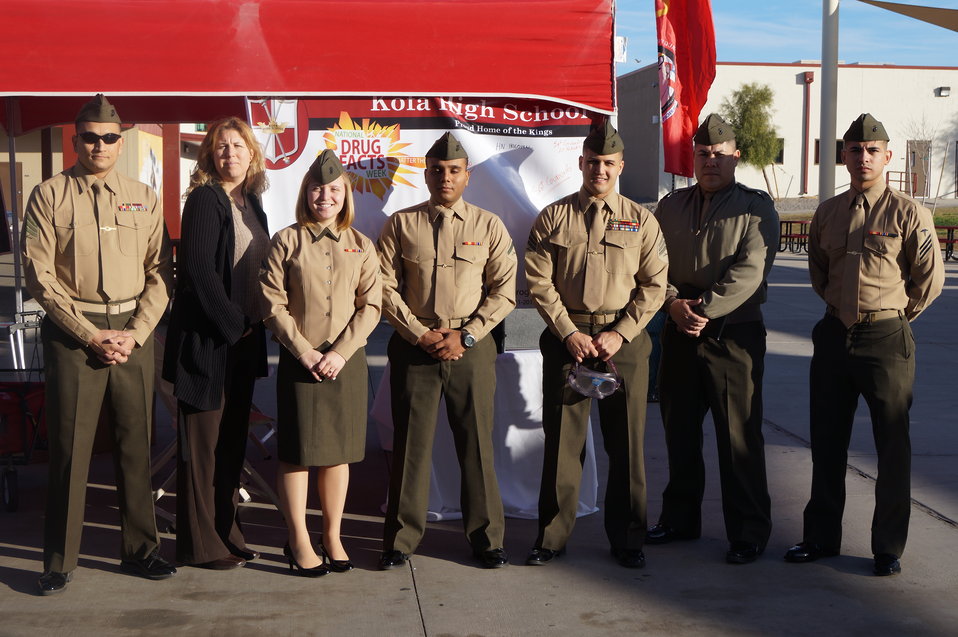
Nationa Drug Facts Week - KOFA HS

The Drug Demand Reduction Program out of Yuma, Arizona held numerous events at local schools to support NIDA's National Drug Facts Week, Jan. 27-Feb. 2 2014. Teens participated in drug awareness games, and helped to Shatter the Myths about teen substance abuse.